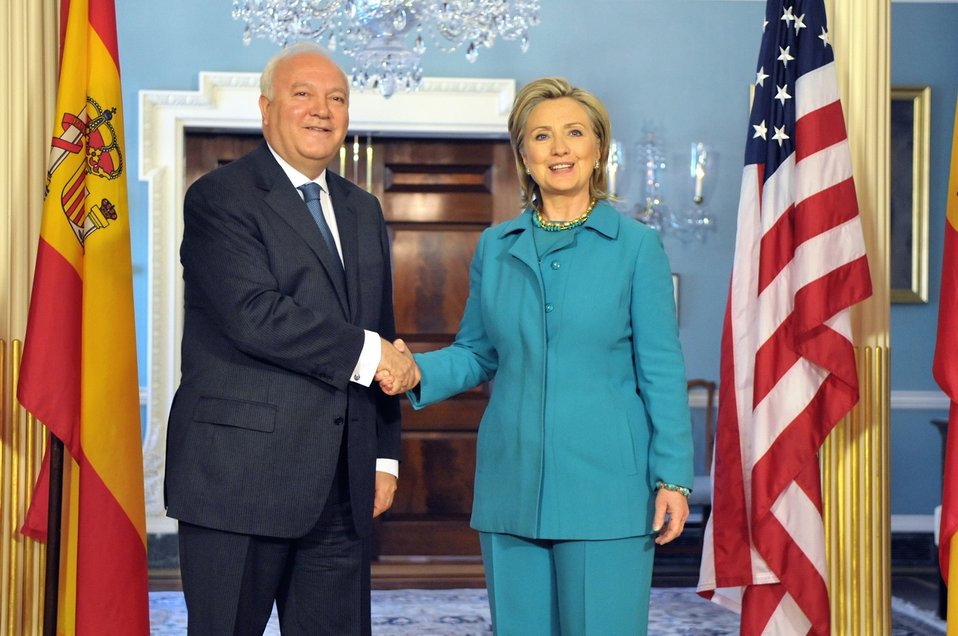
Secretary Clinton With Spanish Foreign Minister Moratinos

U.S. Secretary of State Hillary Rodham Clinton hosts a bilateral meeting with His Excellency Miguel Angel Moratinos, Minister of Foreign Affairs of Spain, at the U.S. Department of State, Washington, DC, April 30, 2010.